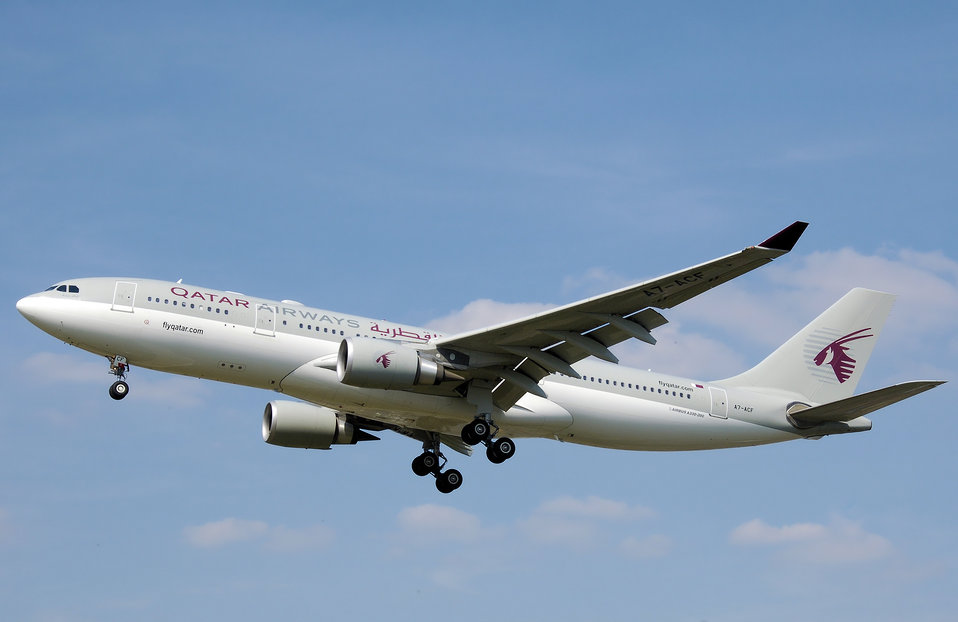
Qatar.airways.a330-200.a7-acf.arp